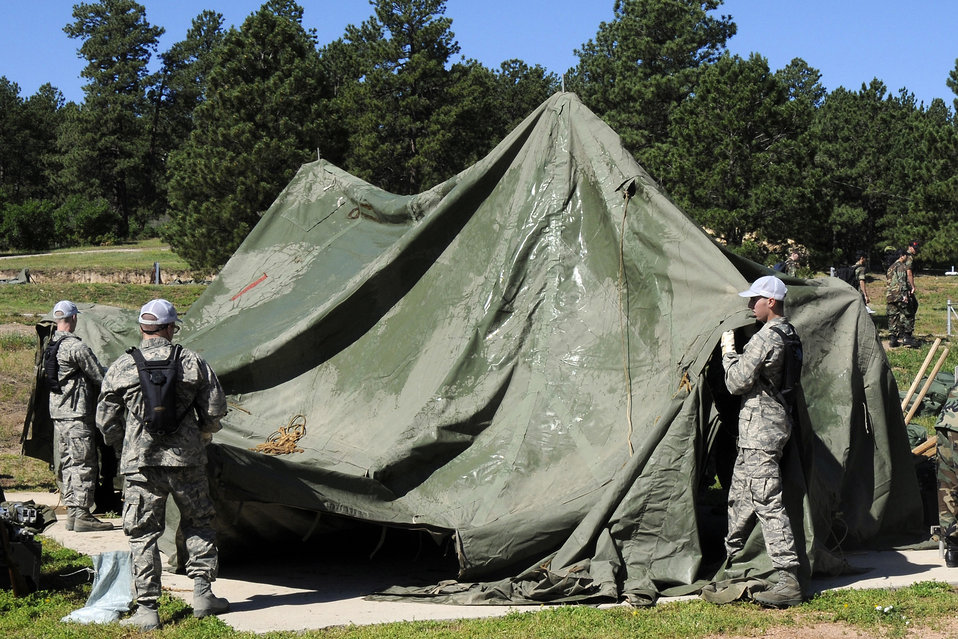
New cadets discover Jacks Valley

U.S. Air Force Academy basic cadets set up tents as they begin the second phase of basic cadet training July 13 in Jacks Valley near Colorado Springs, Colo.